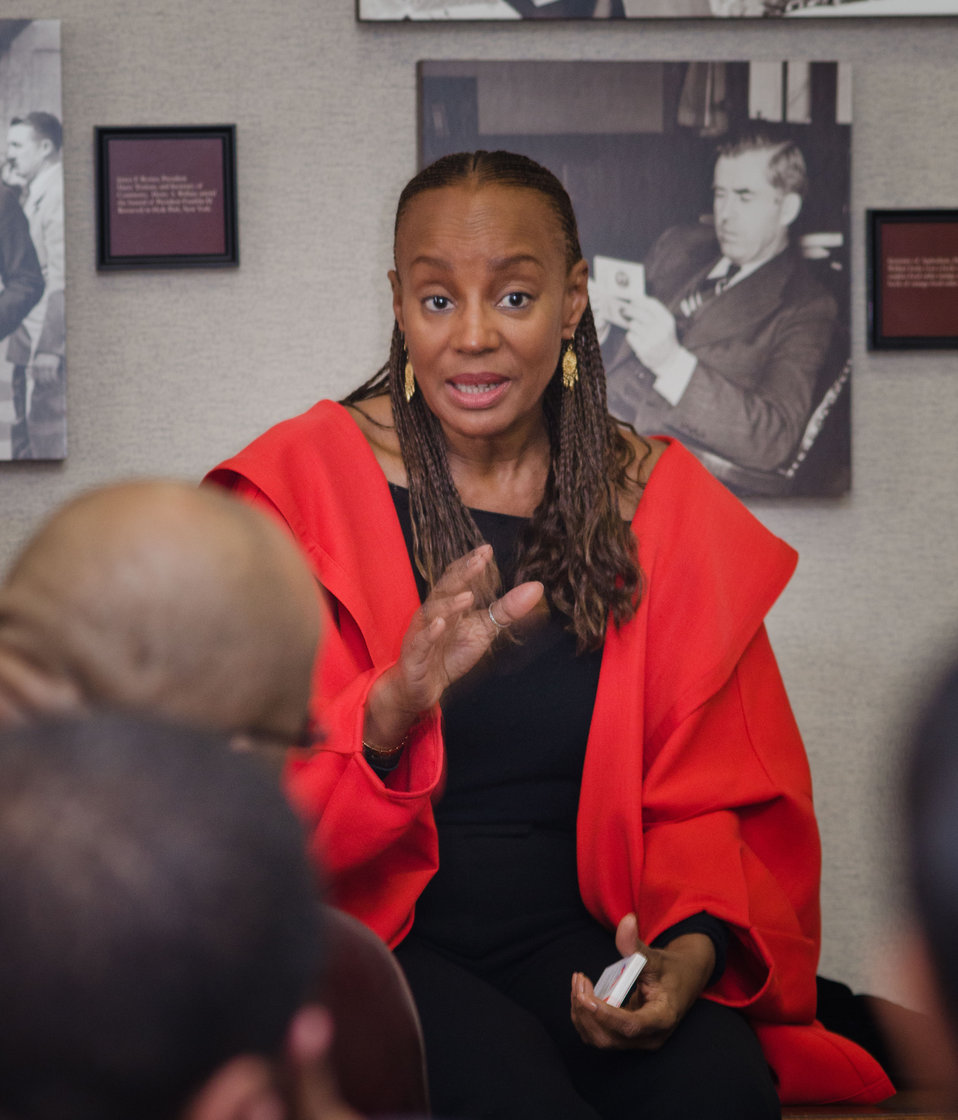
National CARES Mentoring Movement founder and Editor-in-Chief Emeritus, Essence magazine, Susan Taylor (red coat), met for a cross-departmental discussion with Department of Agriculture and Department of Energy personnel in the Whitten Building, U.S. Department of Agriculture, in Washington, D.C., on Tuesday, February 28, 2012. This not-for-profit organization is dedicated to recruiting and connecting mentors with local youth and mentoring organizations to help guide under-resourced children to academic and social success across the country. This discussion provided a continuation of the White House Policy in Action conference that took place in November 2011. The focus of the discussion was about how existing federal programs and administration priorities can be leveraged with her organization, especially as it relates to science, technology, engineering and mathematics (STEM) literacy, education and rural youth.